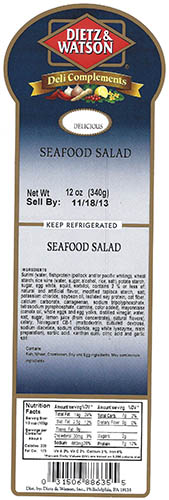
RECALLED – Prepared salads

October 24, 2013 – Product Recall – Boston Salads and Prepared Foods Recalling Ready-To-Eat Products Because of Possible Health Risk.